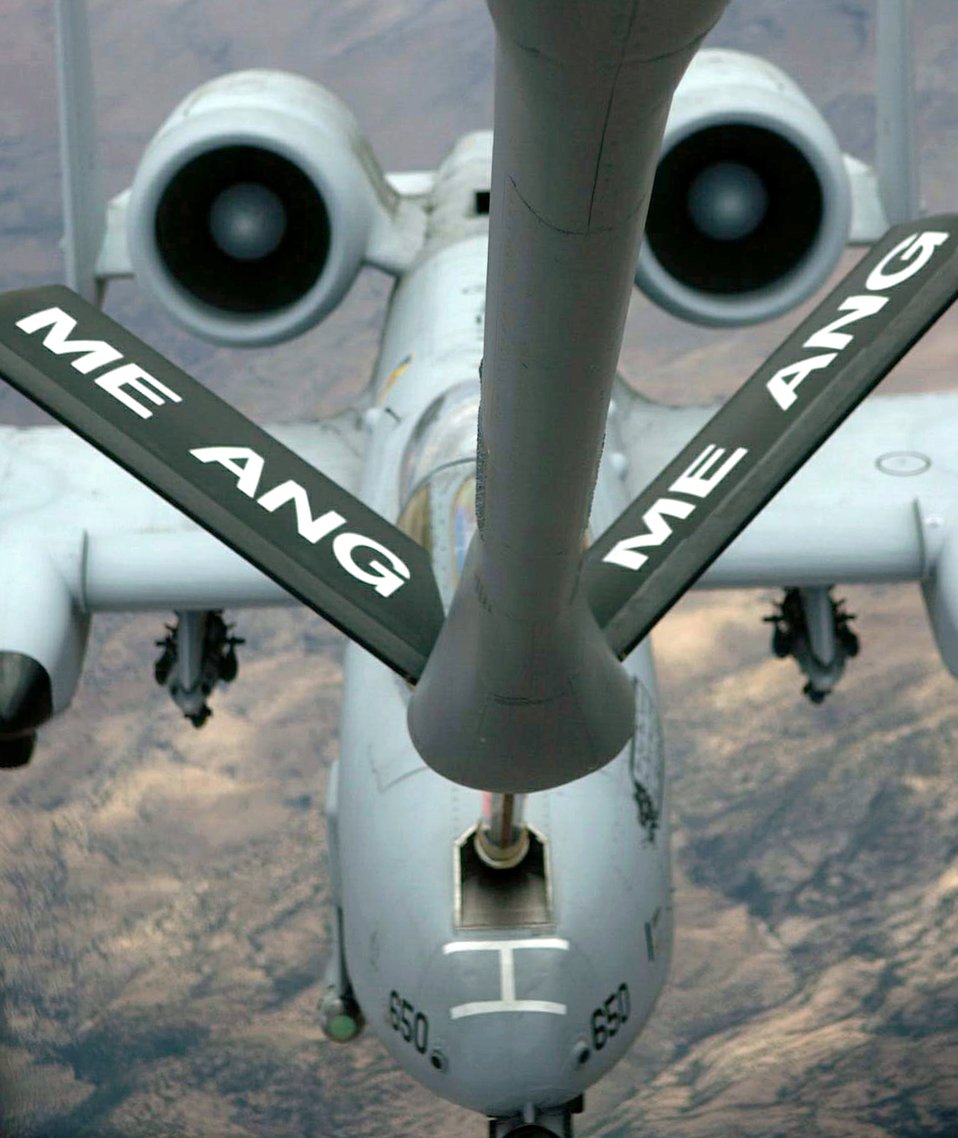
Fueled and ready

An A-10 Thunderbolt II receives fuel from a KC-135E Stratotanker during a training mission Friday, April 14, 2006, over Tucson, Ariz. The A-10 is from the 358th Fighter Squadron at Davis-Monthan Air Force Base, Ariz., and the KC-135E is from the Air National Guard's 101st Air Refueling Wing at Bangor, Maine.